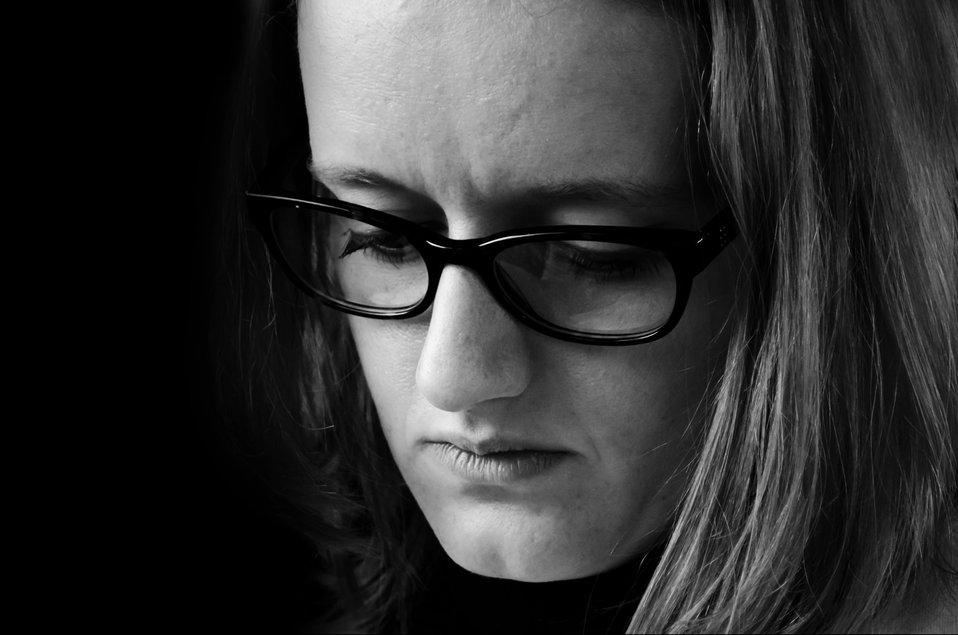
Woman black and white.